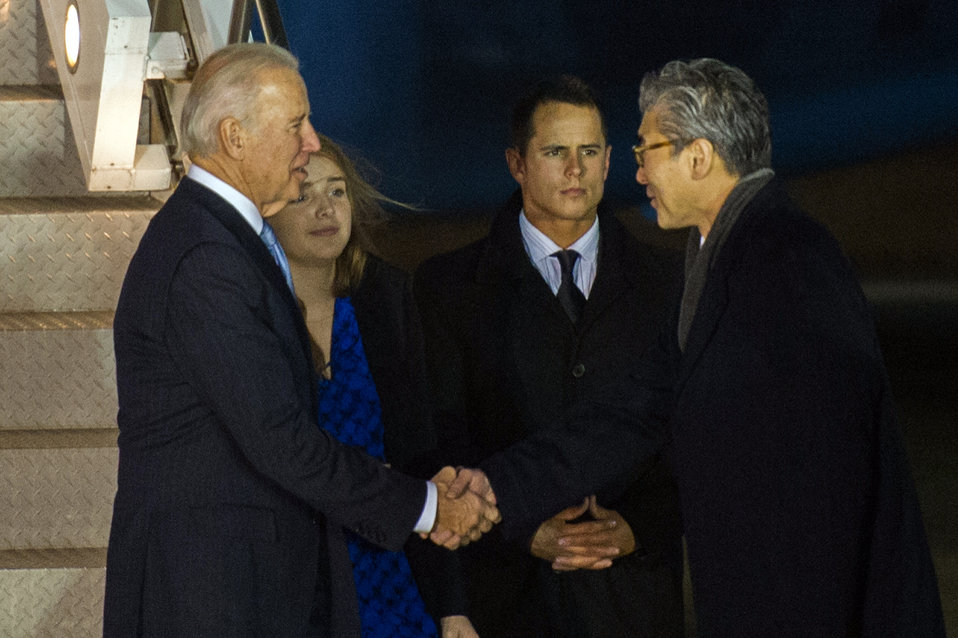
Vice President Biden is Greeted by Ambassador Kim

Vice President Joseph Biden is welcomed by U.S. Ambassador to the Republic of Korea Sung Kim after arriving at Osan Air Base outside of Seoul, South Korea, on December 5, 2013.